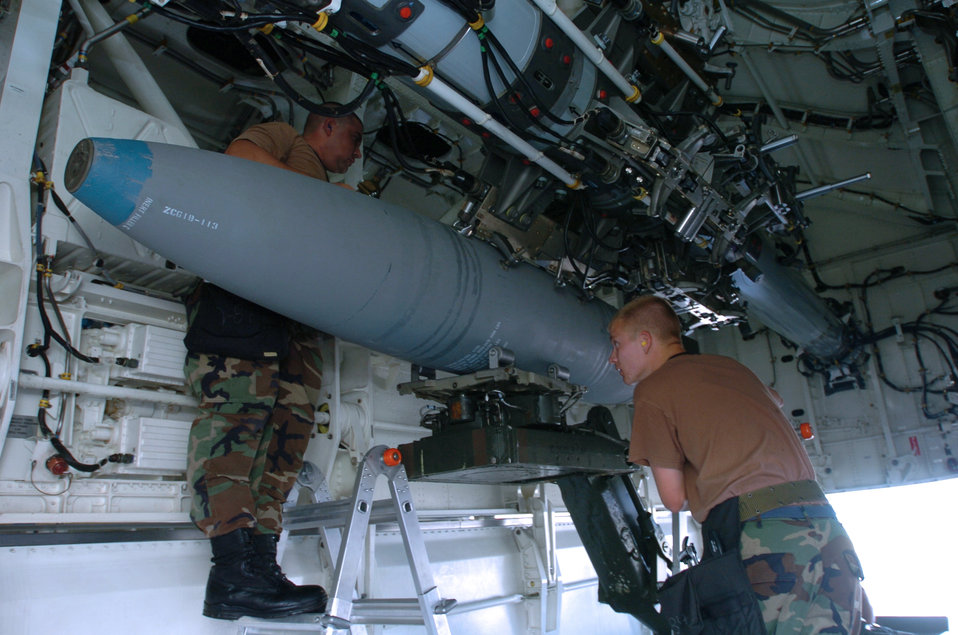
Putting the 'bomb' in bomber

ANDERSEN AIR FORCE BASE, Guam -- Staff Sgt. Michael Taylor (left) and Senior Airman Joseph Nelson load a bomb on a B-2 Spirit bomber here. They are weapons specialists deployed from the 509th Aircraft Maintenance Squadron at Whiteman Air Force Base, Mo.